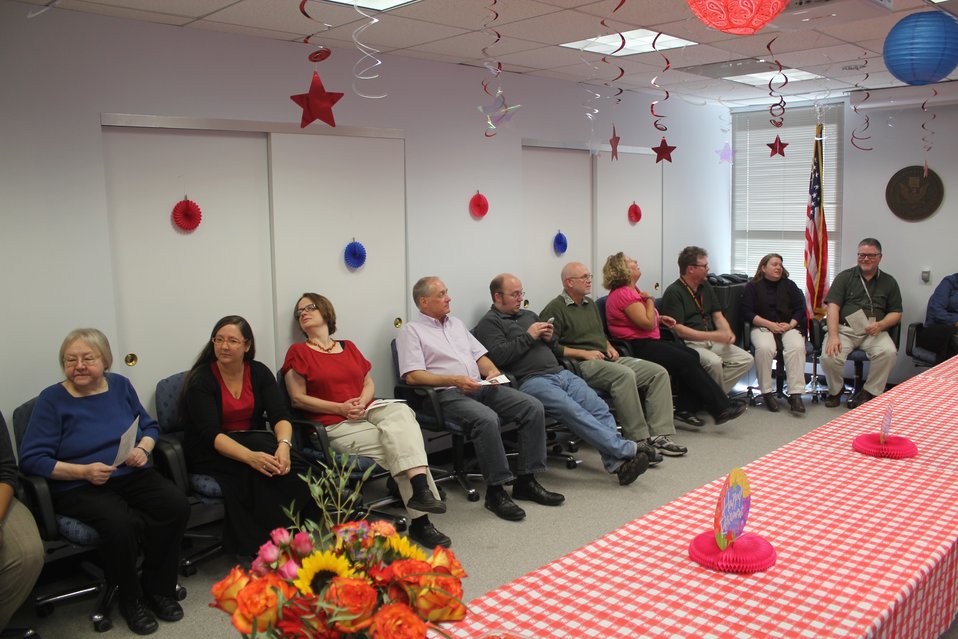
Susie Hurley, Cheryl Sirofchuck, Ann Worley, Mike Denhardt, Greg Perrin, Dwayne Dehlbom, Michele Bugenhagen, Brad Brooks, Miriam Vincent, Brian Swidal attend a retirement party for Karen Allen, served 35 years; Location: Office of the Federal Register, Washington, D.C.